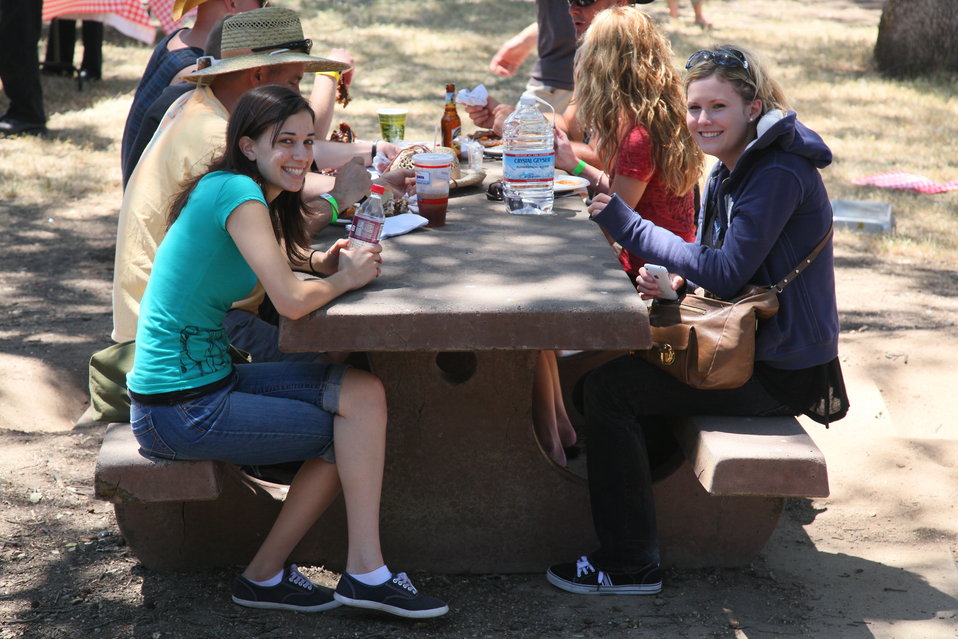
2011 Annual Picnic